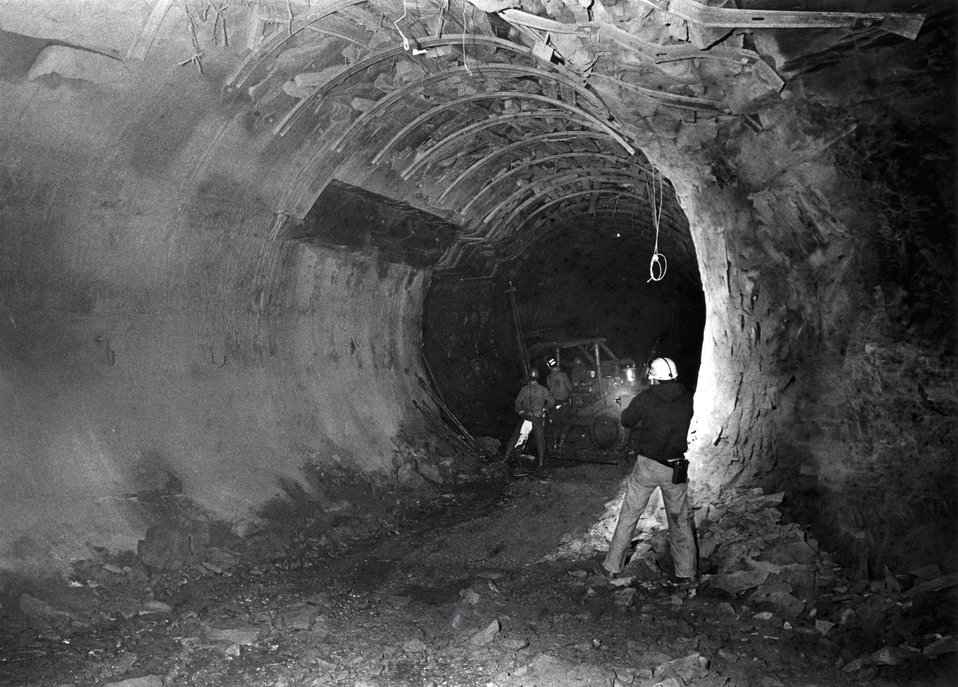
Demonstration of installation of a pumpable roof bolt.